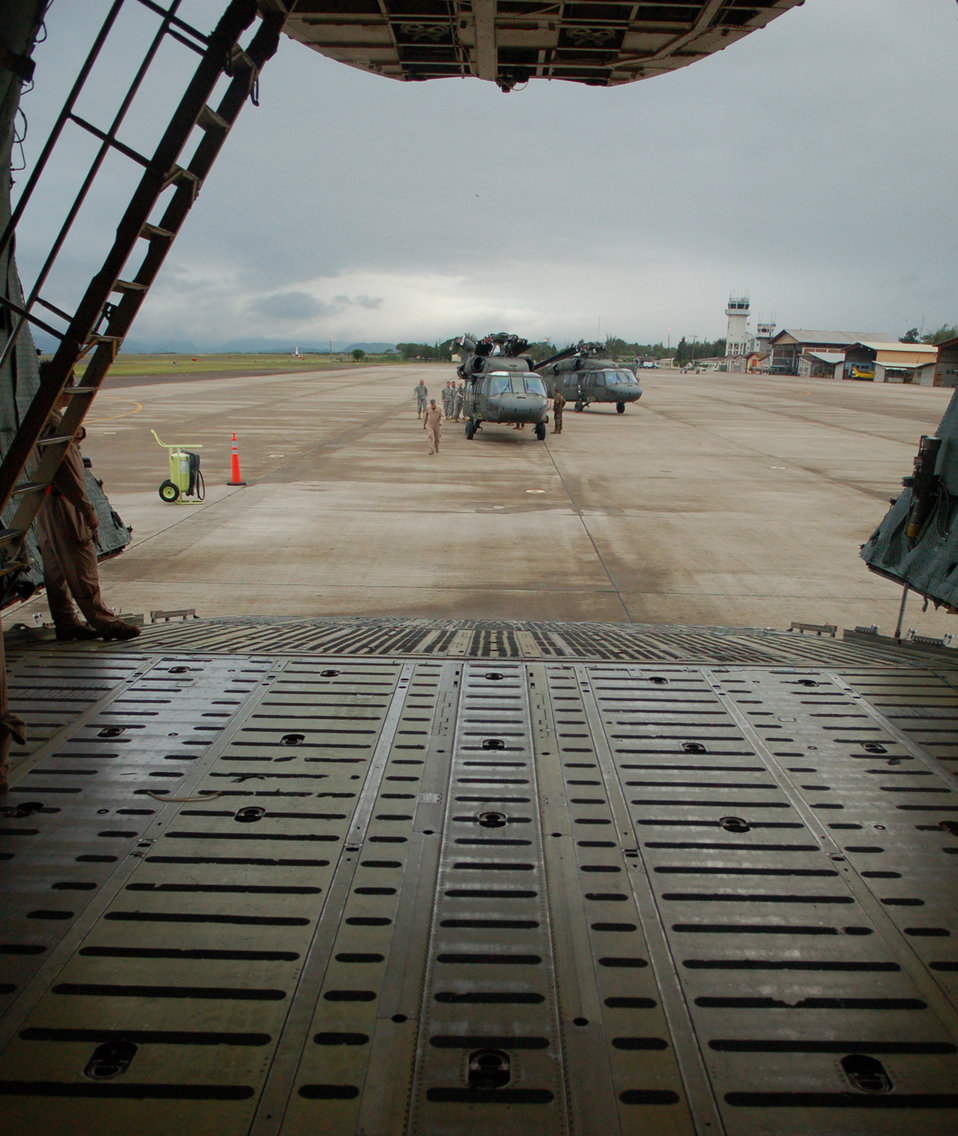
JTF-Bravo deploys to support Tropical Storm Noel relief in Dominican Republic

Two Army UH-60 Black Hawk helicopters sit on the tarmac here prior waiting to be loaded onto a C-5 Galaxy from the New York Air National Guard. A team of 19 Airmen and Soldiers and two helicopters from Joint Task Force-Bravo departed here Nov. 5 heading for the Dominican Republic to assist with recovery efforts in the wake of Tropical Storm Noel.